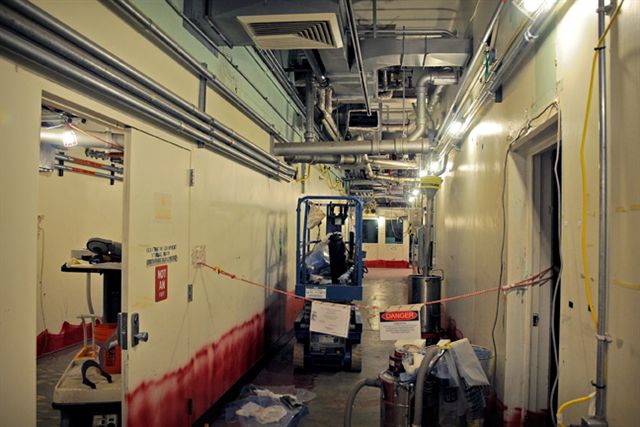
RAN DD INTEC S84 CPP-602 BASEMENT 070610 P6554-002 A